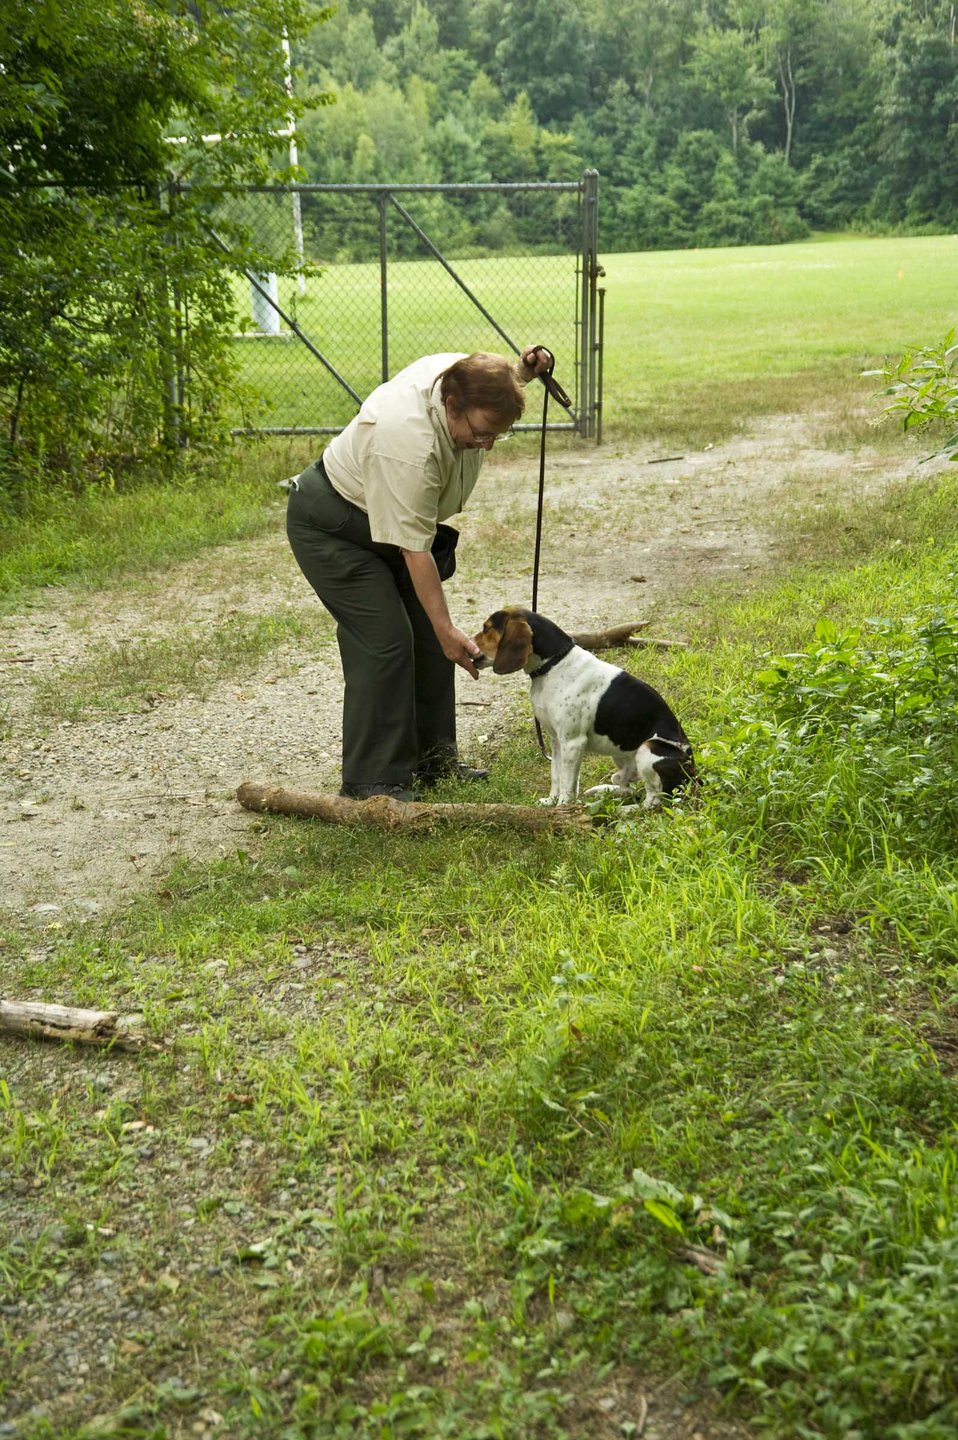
U.S. Department of Agriculture (USDA) Animal and Plant Health Inspection Service (APHIS) training specialist and Project Team Leader Monica Errico rewards Asian Longhorned Beetle (ALB) Detector Dog Merlin for his successful detection of beetle “frass” or excrement in Worcester, MA on Aug. 1, 2012. The ALB is an invasive insect that is killing trees in Massachusetts, New York, New Jersey and Ohio. Four dogs are currently being trained to recognize beetle “frass” that the beetle leaves behind. This study is part of an important mission to protect neighborhood trees and this country’s valuable forest resources from this harmful pest.